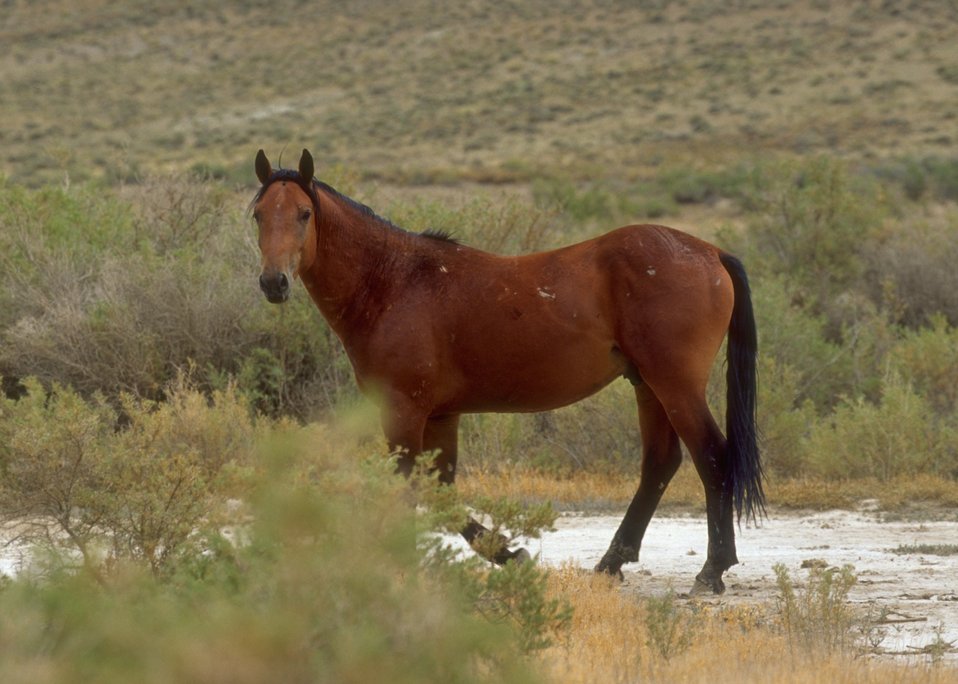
Wild horses, Rock Springs Field Office.